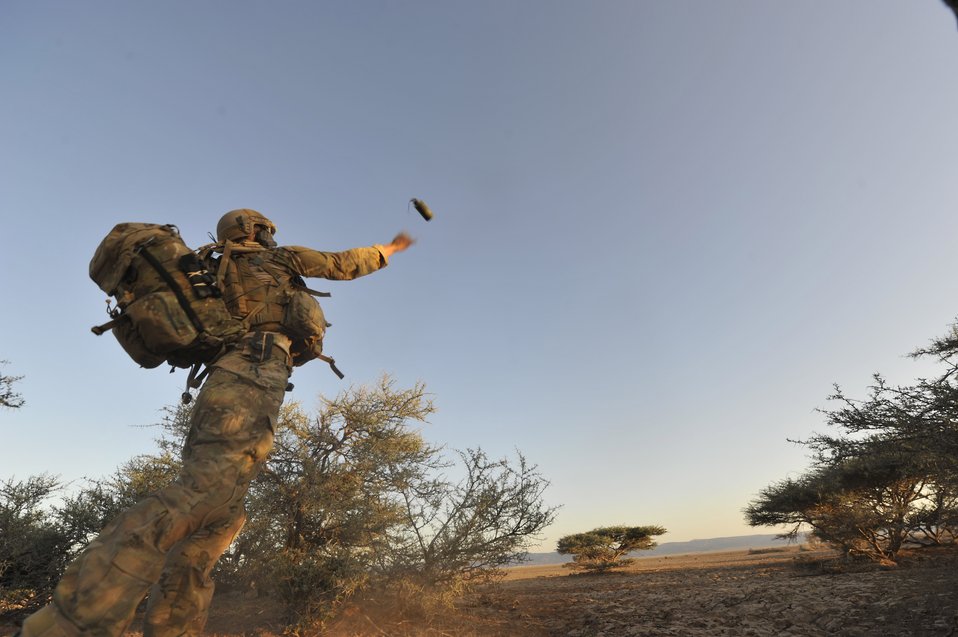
Heroes in training

Senior Airman Eric Humphrey, an 82nd Expeditionary Rescue Squadron pararescueman, throws a colored smoke grenade to mark his team's position during a training scenario in the Grand Bara Desert, Djibouti, Oct. 21, 2011. Using a colored smoke signal is one way pararescuemen designate their position to an air evacuation team.